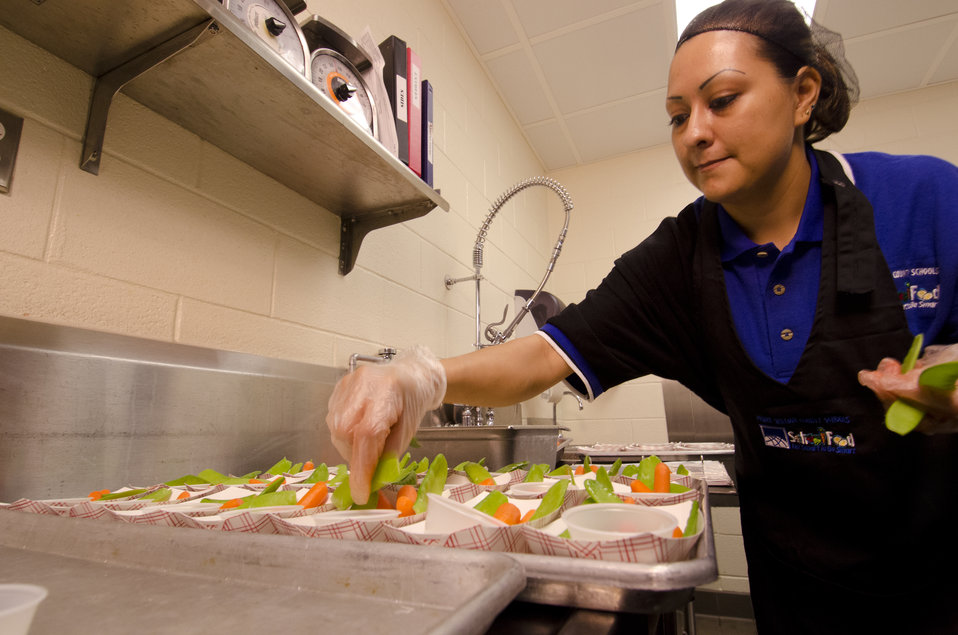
School lunch staff and students enjoy the new school lunch menu created to meet the new standards at the Yorkshire Elementary School in Manassas, VA on Friday, Sept. 7, 2012.